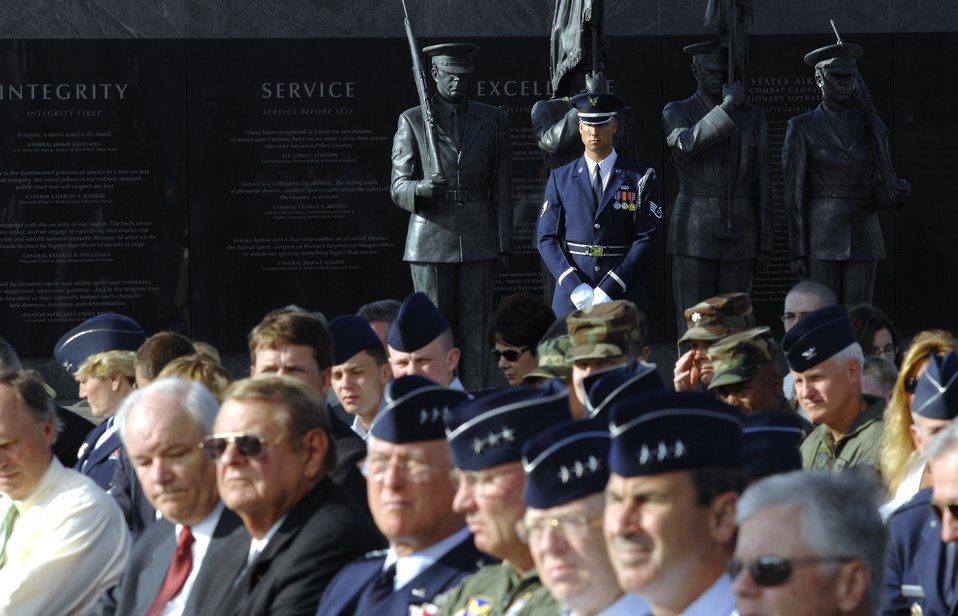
Air Force Combat Action Medal

Staff Sgt. Michael Rowson stands in front of an honor guard statue during a ceremony June 12 where six Airmen were each presented the new Air Force Combat Action Medal. They were the first to receive the medal in a ceremony held at the Air Force Memorial in Arlington, Va.